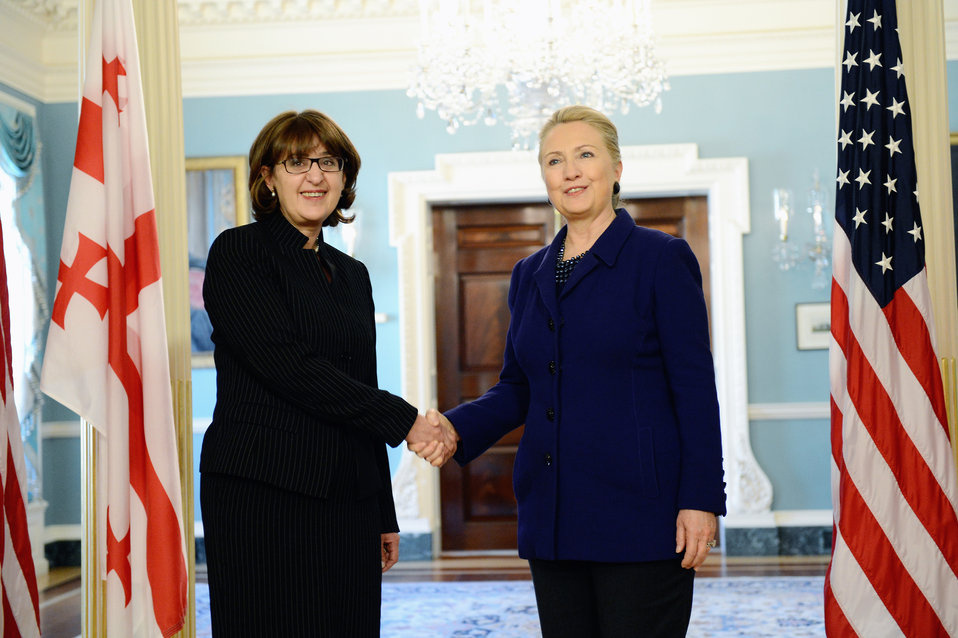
Secretary Clinton Delivers Remarks With Georgian Foreign Minister Panjikidze

U.S. Secretary of State Hillary Rodham Clinton delivers remarks with Georgian Foreign Minister Maia Panjikidze at the U.S. Department of State in Washington, D.C. on November 29, 2012.